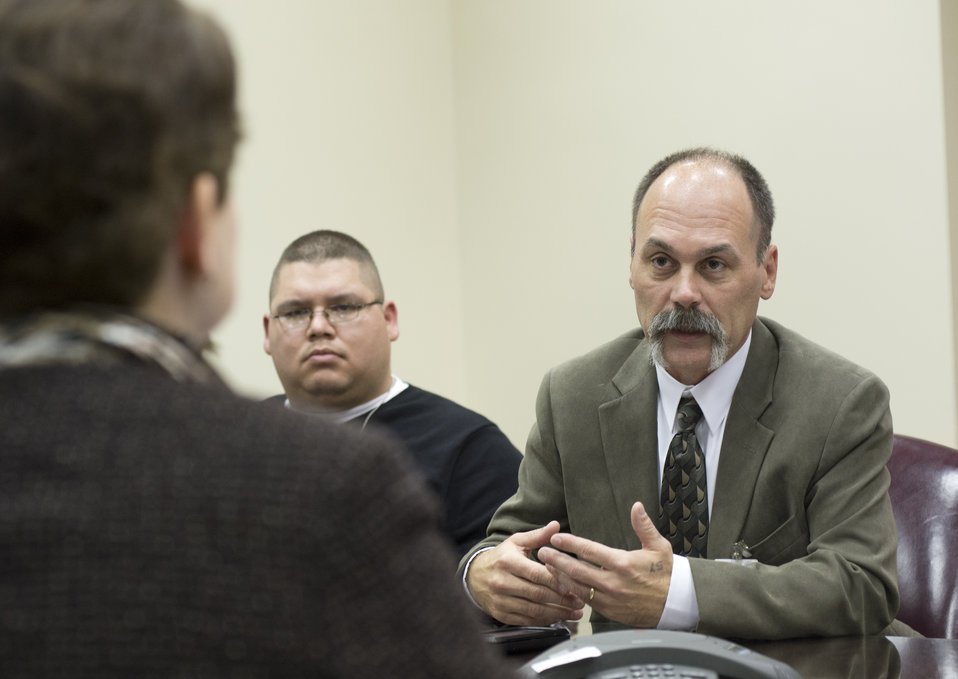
Stillaguamish Tribe, WA Chairman Shawn Yanity (right) discusses the Agriculture, Community and Economic Development Opportunities in Indian Country with Agriculture Deputy Secretary Krysta Harden (left) as Stillaguamish Tribe, WA Council member Nick Smith listens at a meeting with tribal leaders at the U.S. Department of Agriculture (USDA) in Washington, D.C. on Tuesday, Nov. 12, 2013.